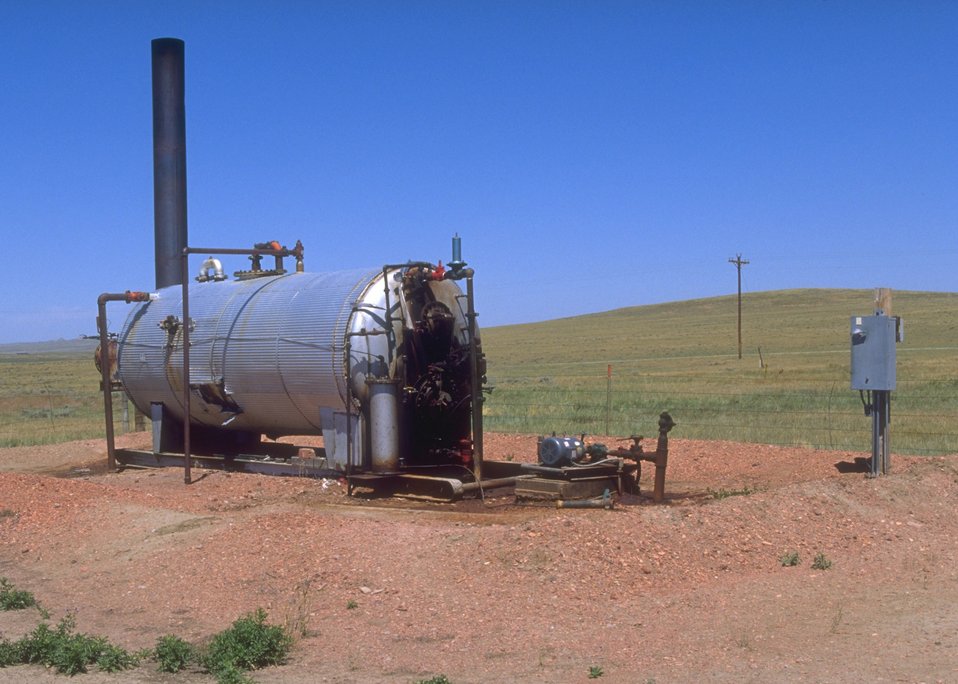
Oil well and associated facilities, Buffalo Field Office.